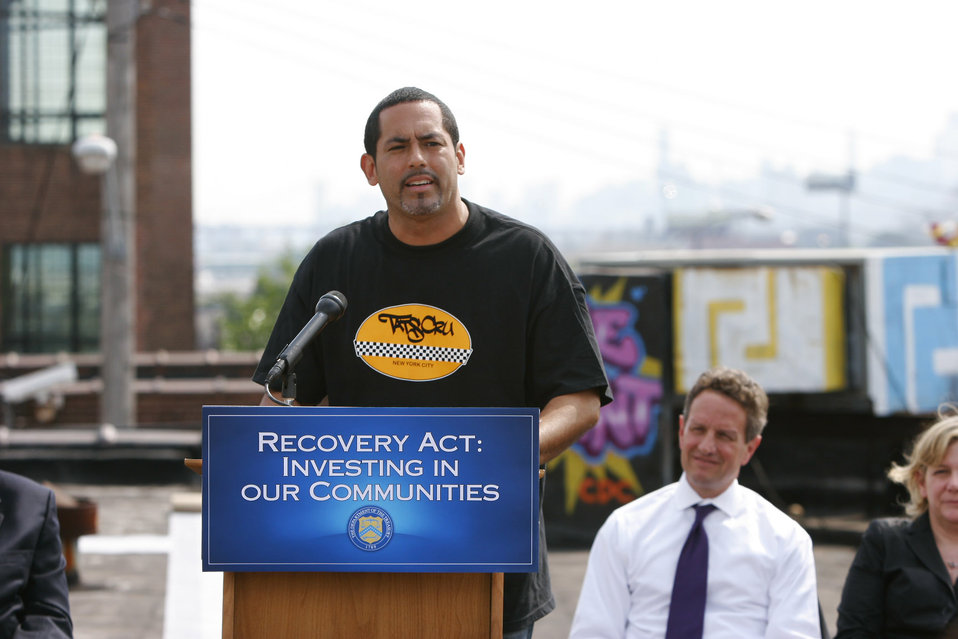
The Point: June 29, 2009

Wilfredo ''Bio'' Feliciano, founding member of Top Artistic Artists Cru (TATS CRU), Inc., a Bronx-based graphic design company headquartered at The Point.